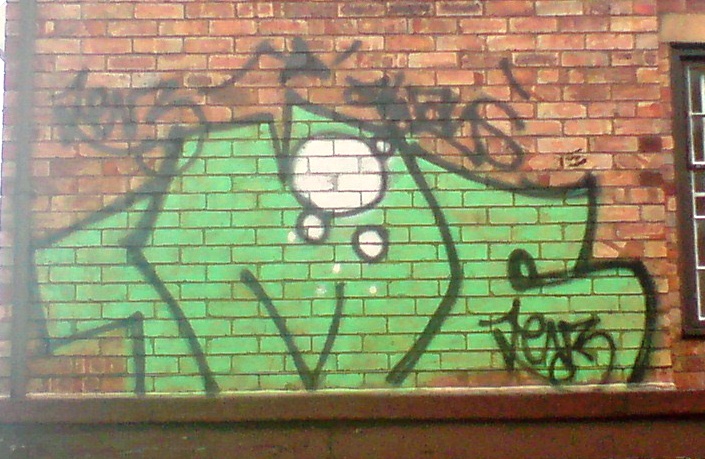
'JMC' graffiti tag